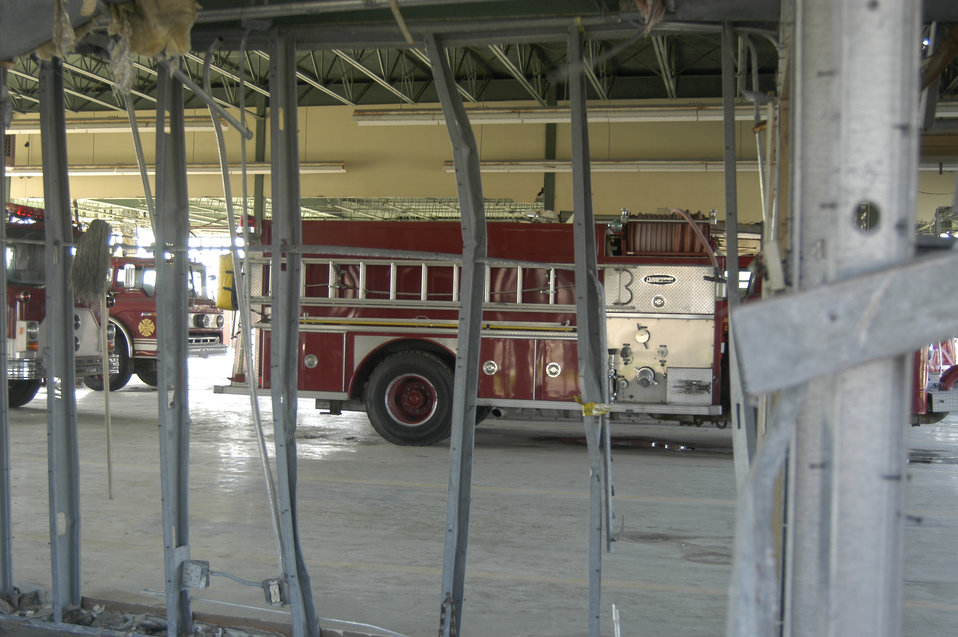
Fire engines shelter in the shell of their old fire station in Plaquemines Parish, LA, destroyed by Hurricane Katrina. Katrina made landfall on Monday morning, August 29, 2005 as a Category 3 hurricane with sustained winds of 125 mph with over a 20-foot storm surge. Katrina caused catastrophic damage over 90 thousand square miles across Louisiana with an estimated $75 billion dollars in damage. The total economic impact to the Gulf Coast was estimated at over $150 billion. 80% of New Orleans, LA, was underwater with some areas more than 20 feet deep. Less than a month later southern Louisiana was struck by a second Category 3 hurricane Rita inflicting more damage in the southwestern areas of Louisiana adding an addition $12 billion worth of damage to the already beleaguered state. The U. S. Army Corps of Engineers (USACE) under the auspices of Federal Emergency Management Agency (FEMA) was the lead service in providing assistance to the citizens of Louisiana. The U.S. Department of Agriculture (USDA) supplied emergency food aid, emergency loan assistance to farmers and home owners, and USDA personnel from around the nation volunteered their time and muscle to aid in the recovery operations.